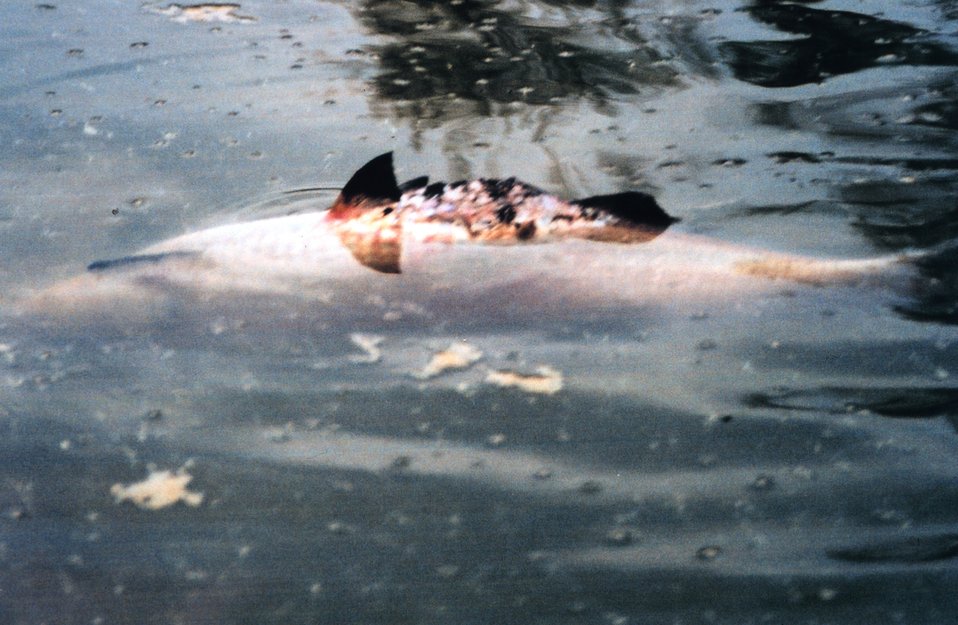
A dead fish floats on the surface after the April 7th Swanson Creek oil spill.